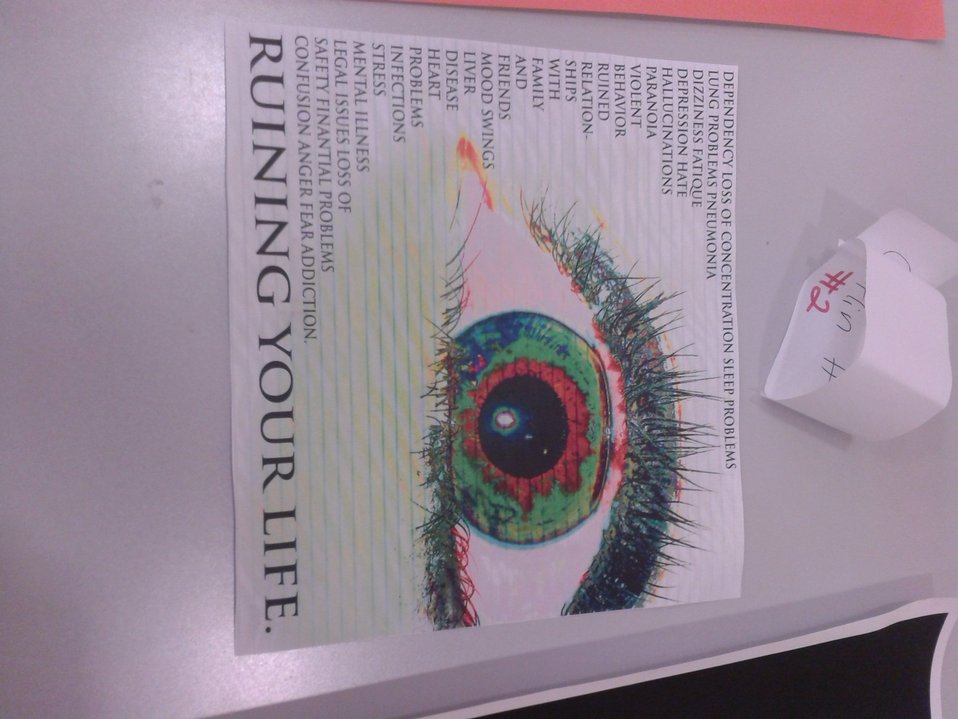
South Carolina's NDFW 2013

Horry County Schools, S.C., Academy for the Arts and Science, and Technology holds NDFW 2013 Event.